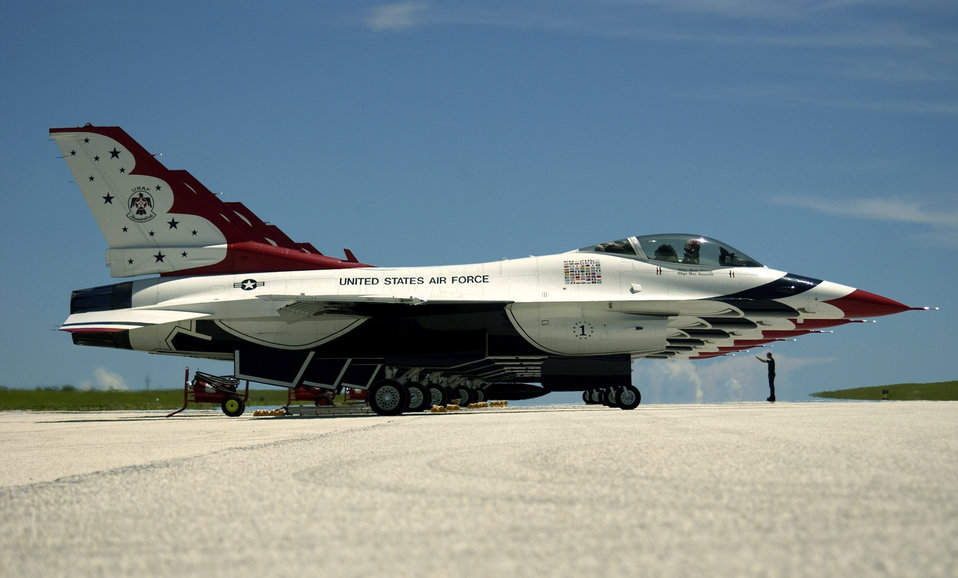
Overdue visit

ANDERSEN AIR FORCE BASE, Guam -- Tech. Sgt. Brian Plauche guides a taxiing U.S. Air Force Thunderbirds demonstration aircraft after the team landed here Sept. 9. This is the first time in a decade the USAF Thunderbirds demonstration team has visited Guam. The Thunderbirds will perform during an air show held Sept. 12. Sergeant Plauche is assigned with the U.S. Air Force Thunderbirds.